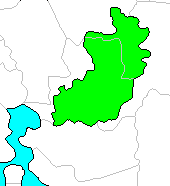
Map of California's 8th State Assembly district